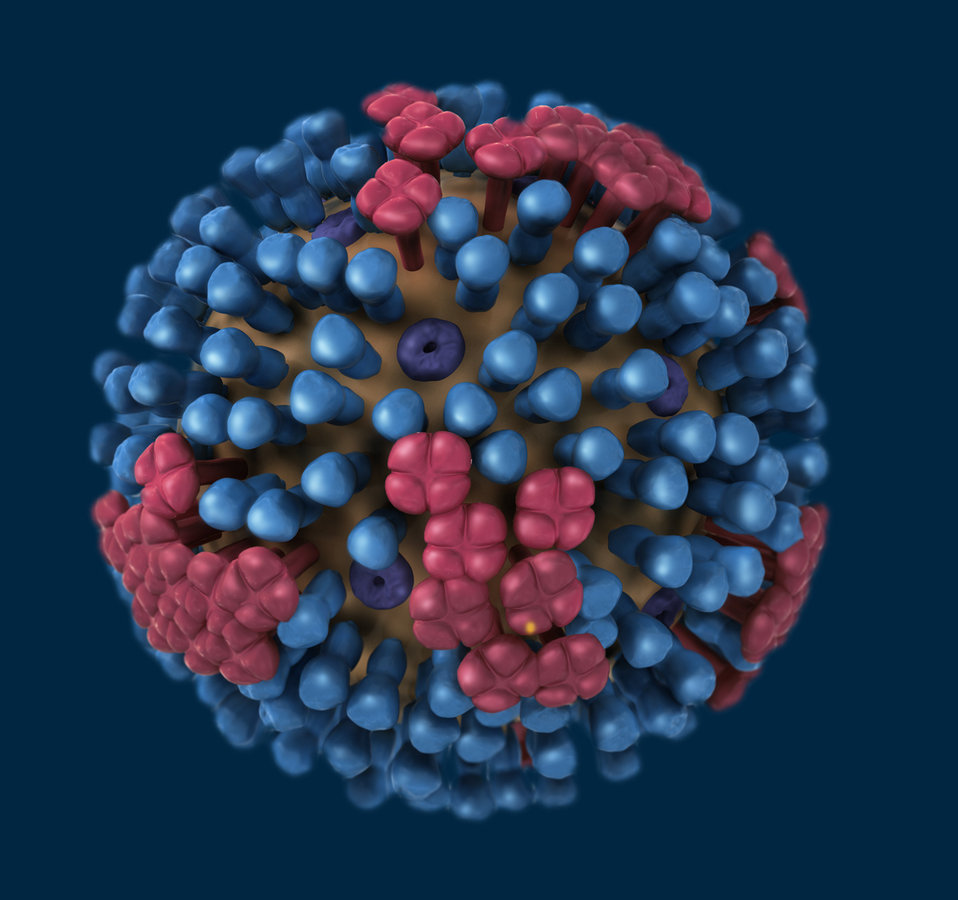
This illustration provides a 3D graphical representation of a generic influenza virion's ultrastructure, and is not specific to a seasonal, avian or 2009 H1N1 virus. See PHIL 11826 for a view of this virus in which a portion of the virion's protein coat, or 'capsid', has been cut away, revealing its inner nucleic acid core proteins, as well as a key identifying the organism's protein constituents.